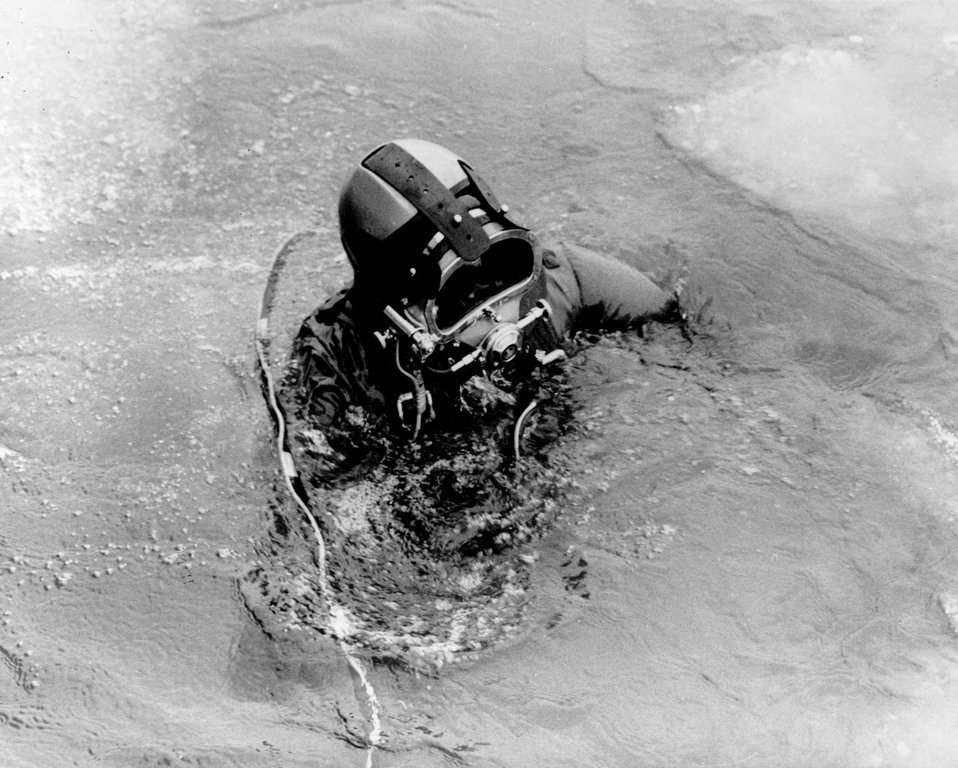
Bob Anderson, a U of Michigan diver, prepares to submerge through 'slush ice' in the frigid waters of Lake Michigan, to direct the placement of temperature recording instruments on the boulder strewn bottom.
c.1972